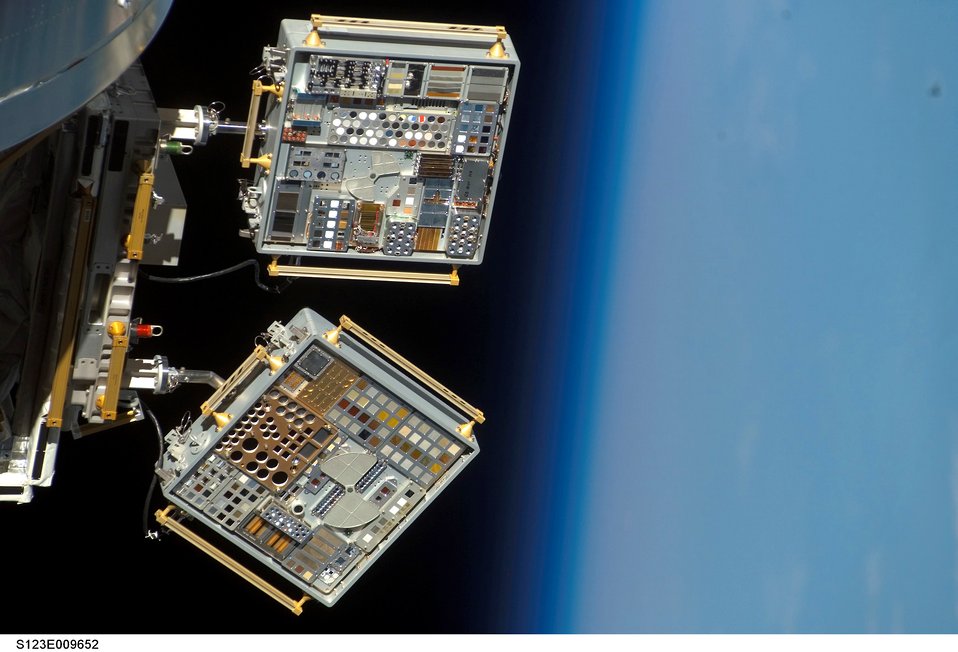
International Space Station conducts tests for Air Force

NASA recently partnered with Air Force Research Laboratory officials from Wright-Patterson Air Force Base, Ohio, to conduct materials experiments aboard the International Space Station. The Materials on the International Space Station Experiment program exposes items in suitcase-sized containers to orbit before returning them to Earth aboard the space shuttle. Pictured is MISSE 6A and 6B.